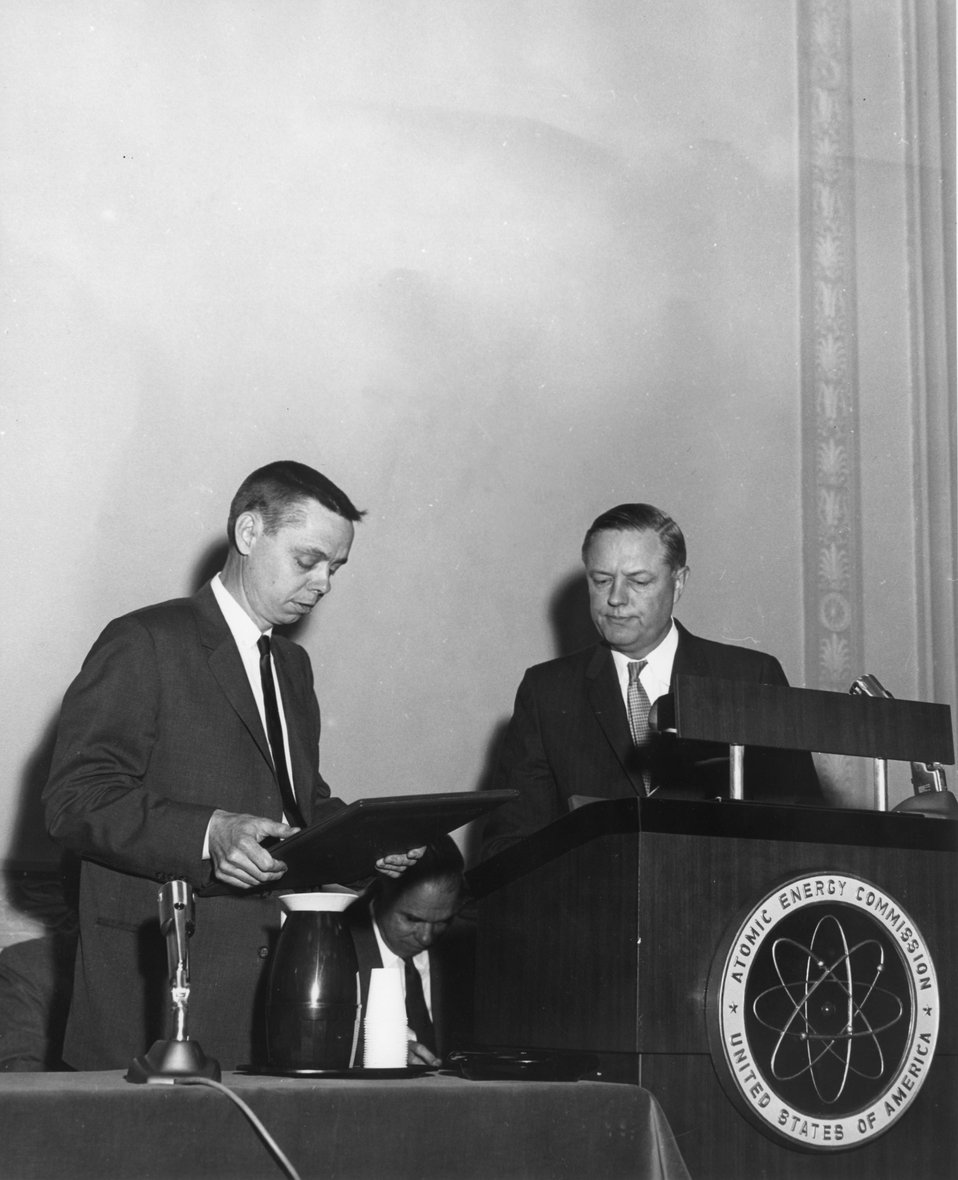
Lawrence Award Ceremony, 1961.